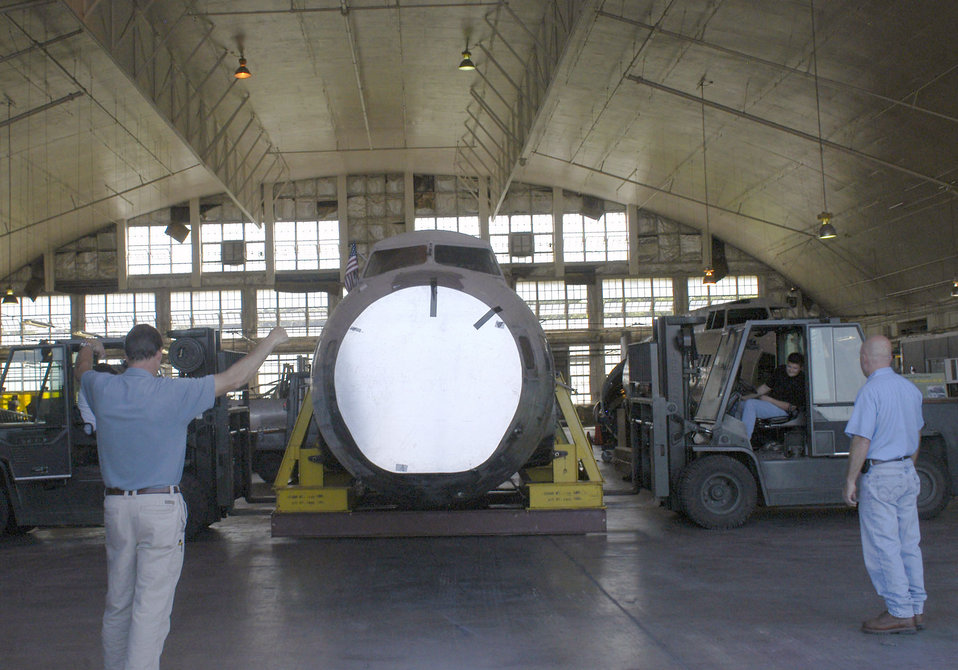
'The Swoose' finds new home at National Museum of the U.S. Air Force

Restoration crews work together to unload the fuselage of the B-17D The Swoose that recently arrived at the National Museum of the U.S. Air Force near Dayton, Ohio from the National Air and Space Museum in Washington D.C.